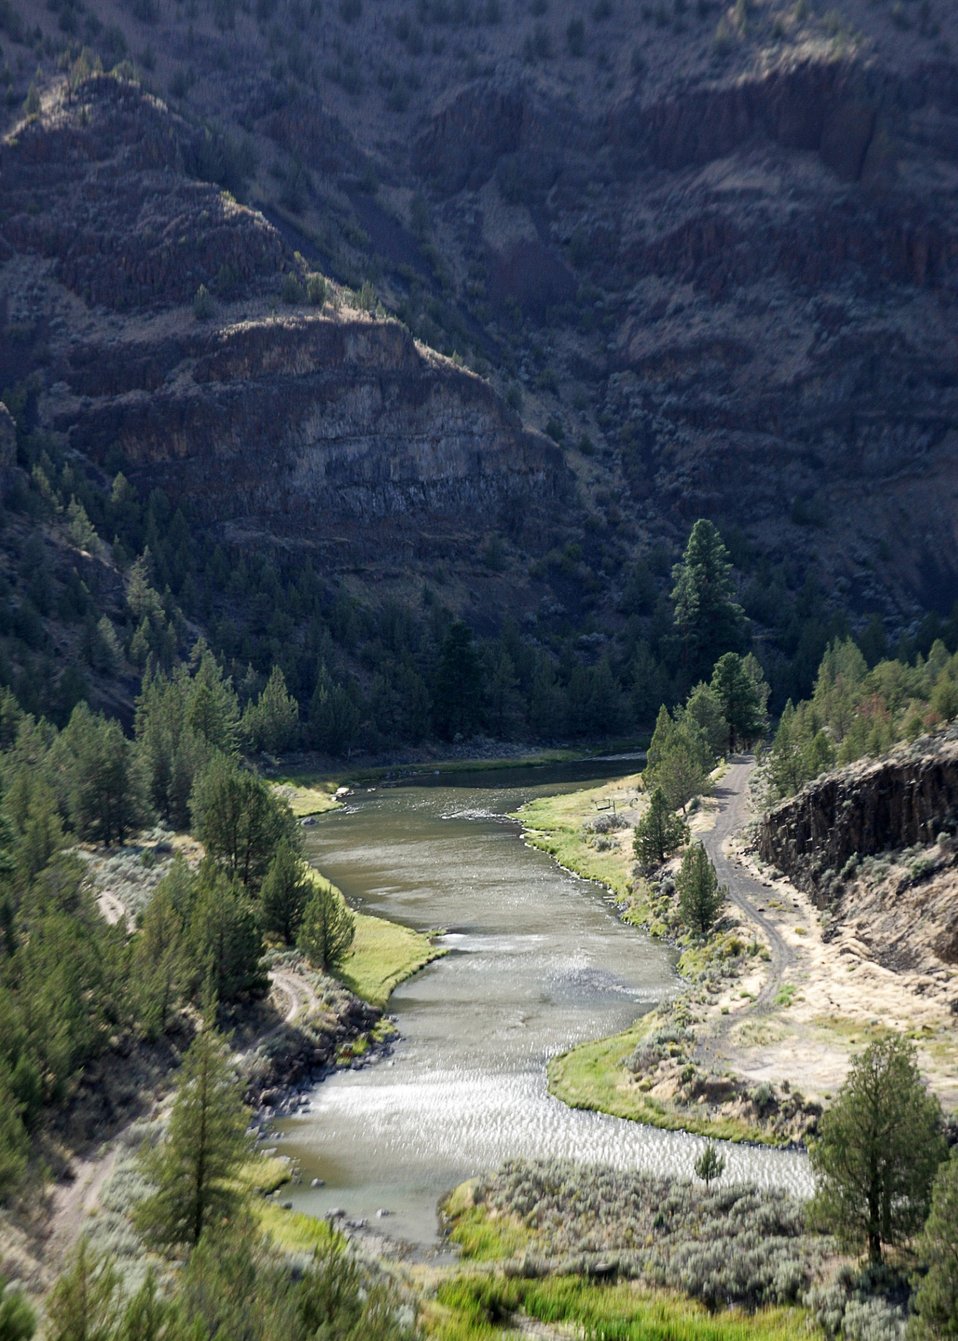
Lower Crooked River Backcountry Byway.